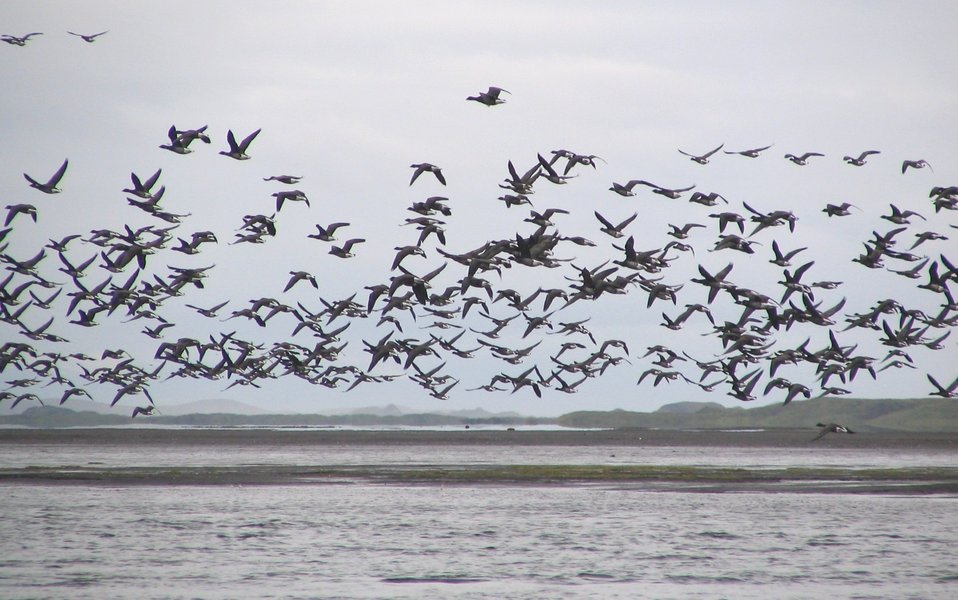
Brant at Izembek Lagoon

Izembek National Wildlife Refuge